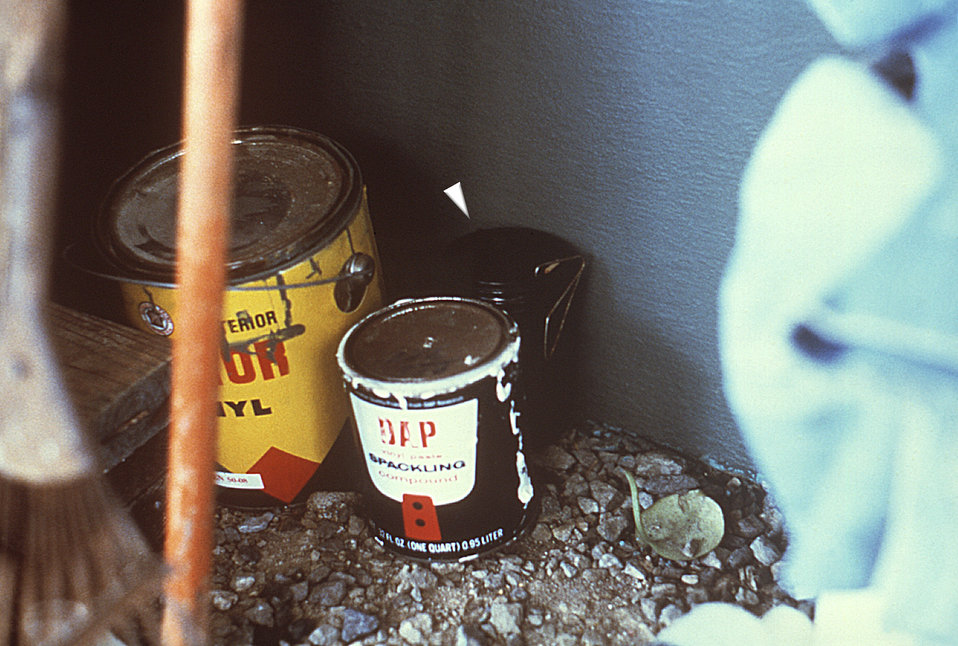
This photograph depicts a black 'ovitrap jar' equipped with an 'ovipaddle', composed of an oviposition substrate, wrapped around a tongue depressor, and finally wrapped with paper toweling on which the female mosquito will be enticed to deposit her eggs.